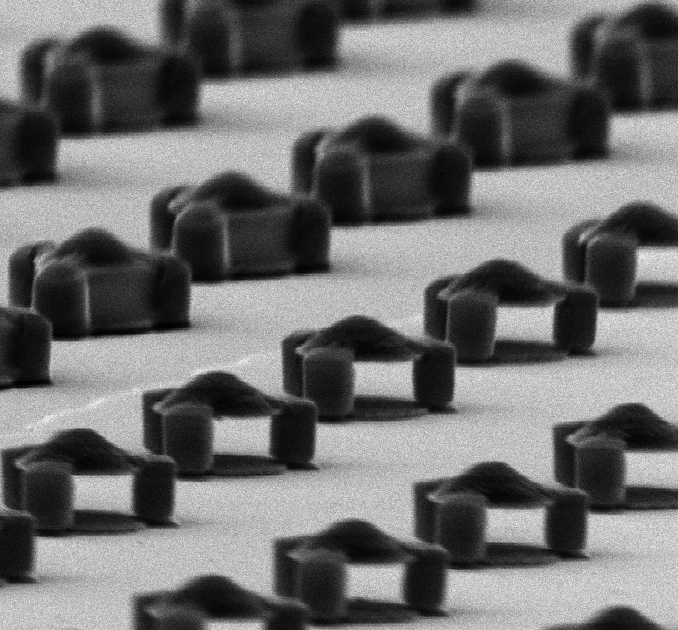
Microscopic magnets, designed and tested in a joint NIST/NIH project, might one day be injected into the body to add color and 'smart tag' capability to magnetic resonance imaging for medical diagnosis and research.